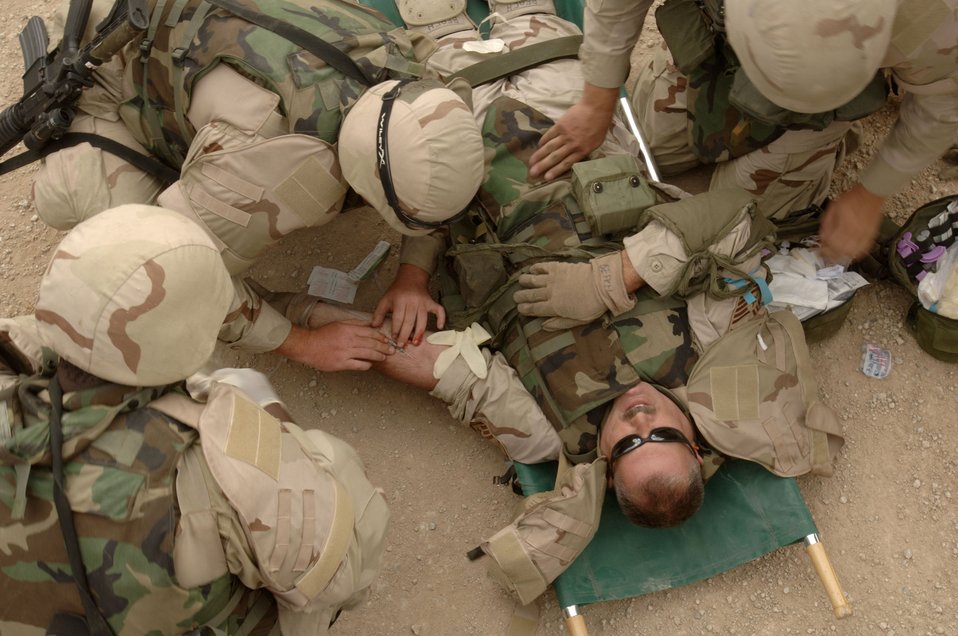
Convoy course training

SAN ANTONIO -- Master Sgt. James Beach gets